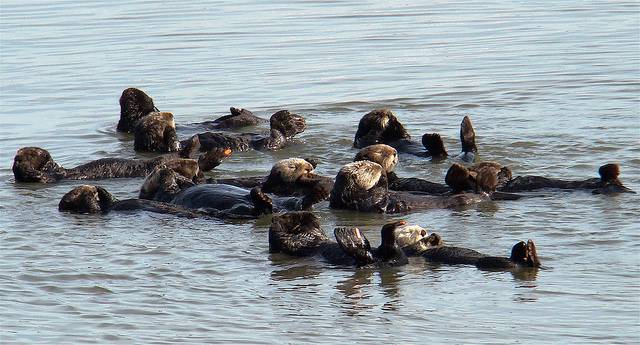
threatened southern sea otter clan